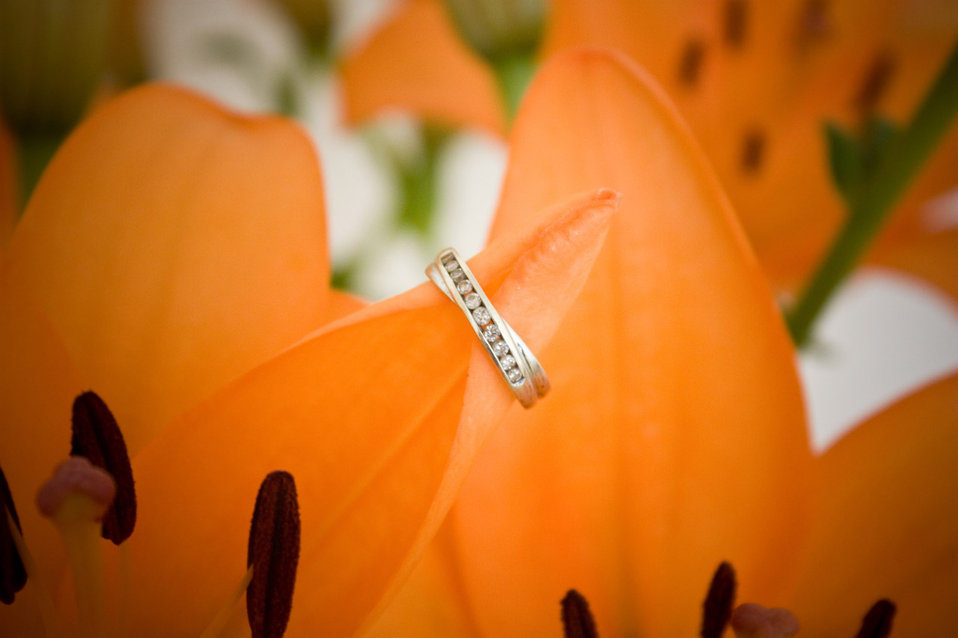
Engagement ring.